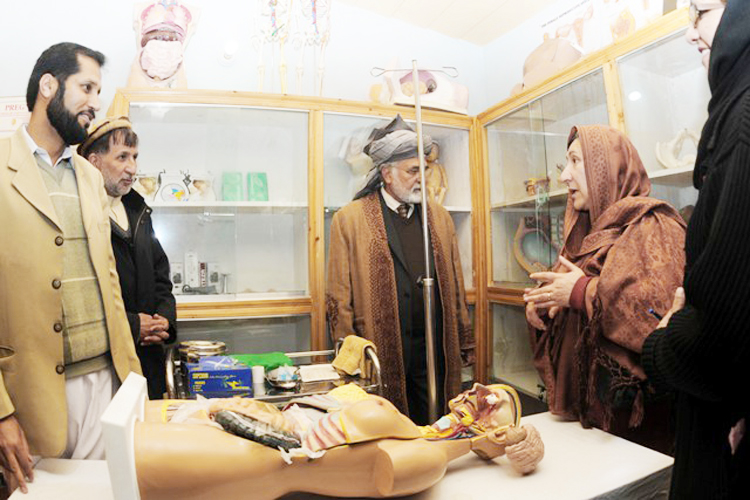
Provincial government, American servicemembers dedicate midwifery program in Afghanistan

Fazlullah Wahidi (center) and Pashtoon Azfar (right) Afghan midwife committee chief take a tour of the Kunar midwifery program training center Dec. 22 in Asadabad, Afghanistan. The midwifery program will train 24 women from Kunar province in an 18-month long course on providing prenatal and postpartum care to expectant mothers and their babies to decrease infant mortality rates. Mr. Wahidi is the Kunar provincial governor. Mrs. Azfar is the Afghan midwife committee chief.